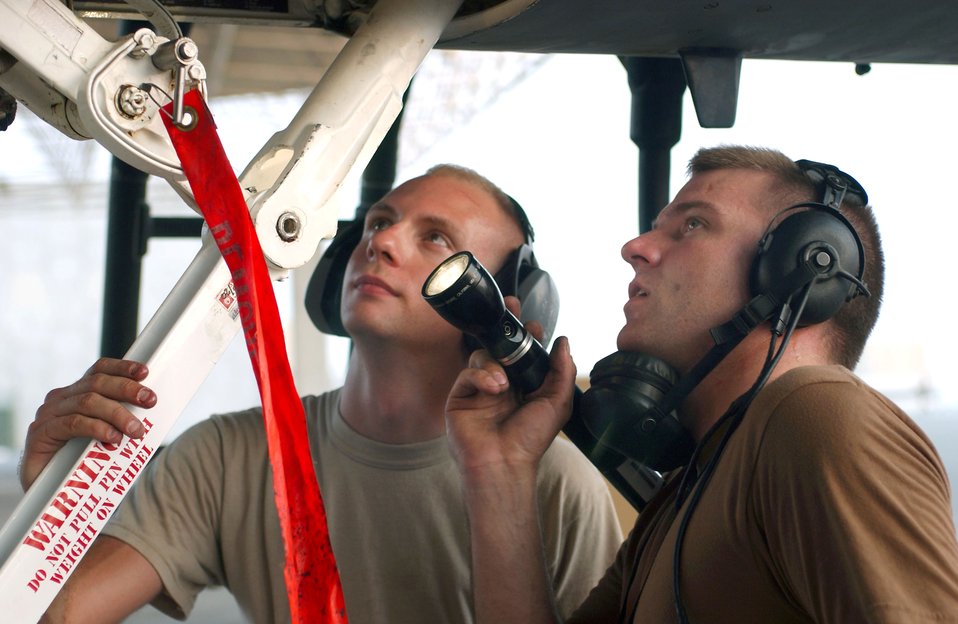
Iraqi/Enduring Freedom

Senior Airman Jeremiah Ostuni (left) and Staff Sgt. Jared Moor perform a nose landing gear functional check at a forward operating base in Southwest Asia on Aug. 13. The Airmen are assigned to the 335th Aircraft Maintenance Unit.